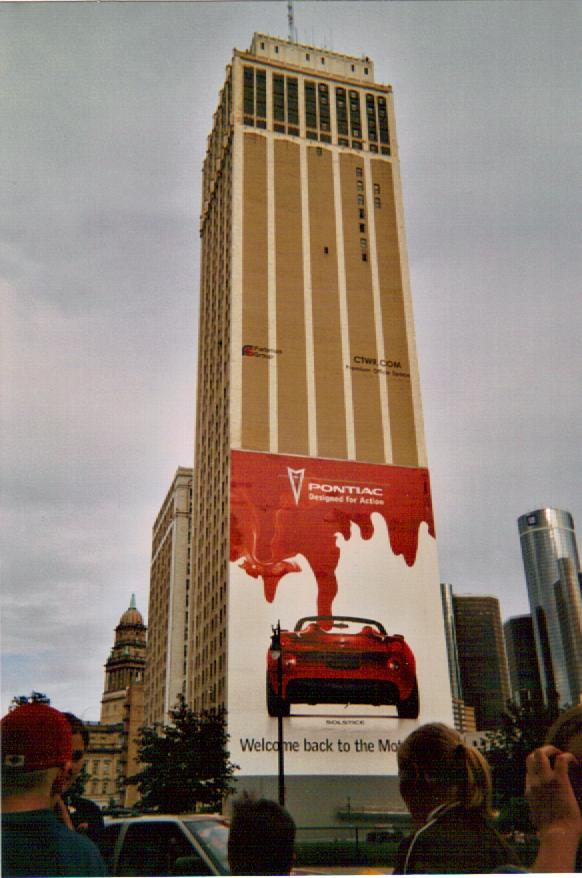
Cadillac Tower in Detroit, Michigan, United States.